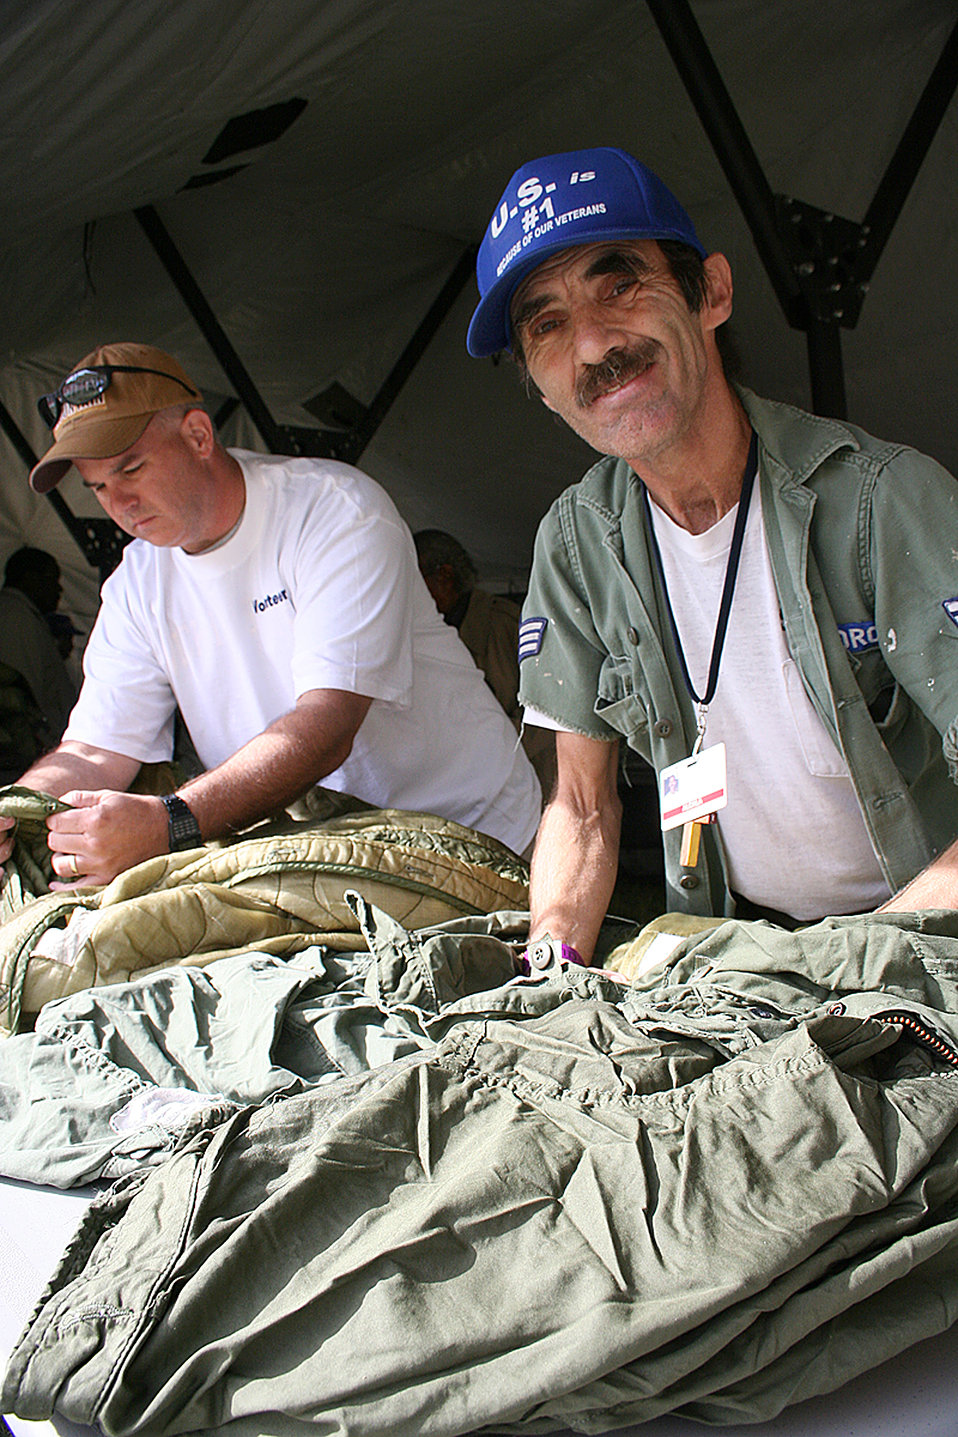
Helping the homeless

A homeless six-year Vietnam veteran smiles and wears his veteran's hat,